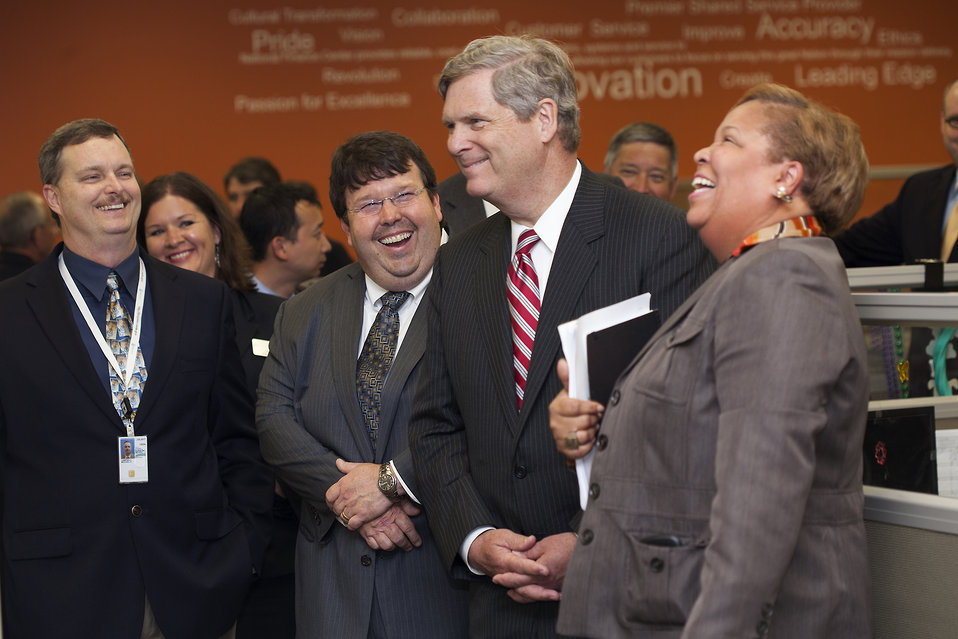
Secretary of Agriculture Tom Vilsack laughed with staff of the U.S. Department of Agriculture (USDA), National Finance Center (NFC) on Wednesday, May 1, 2013, in New Orleans, La., during his tour of their call center. Left to right, Michael Campbell of the USDA; Jon Holladay Deputy Chief Financial Officer, Secretary of Agriculture Tom Vilsack and Dawn Hughes-Morris, Associate Director of Payroll Operations at NFC.